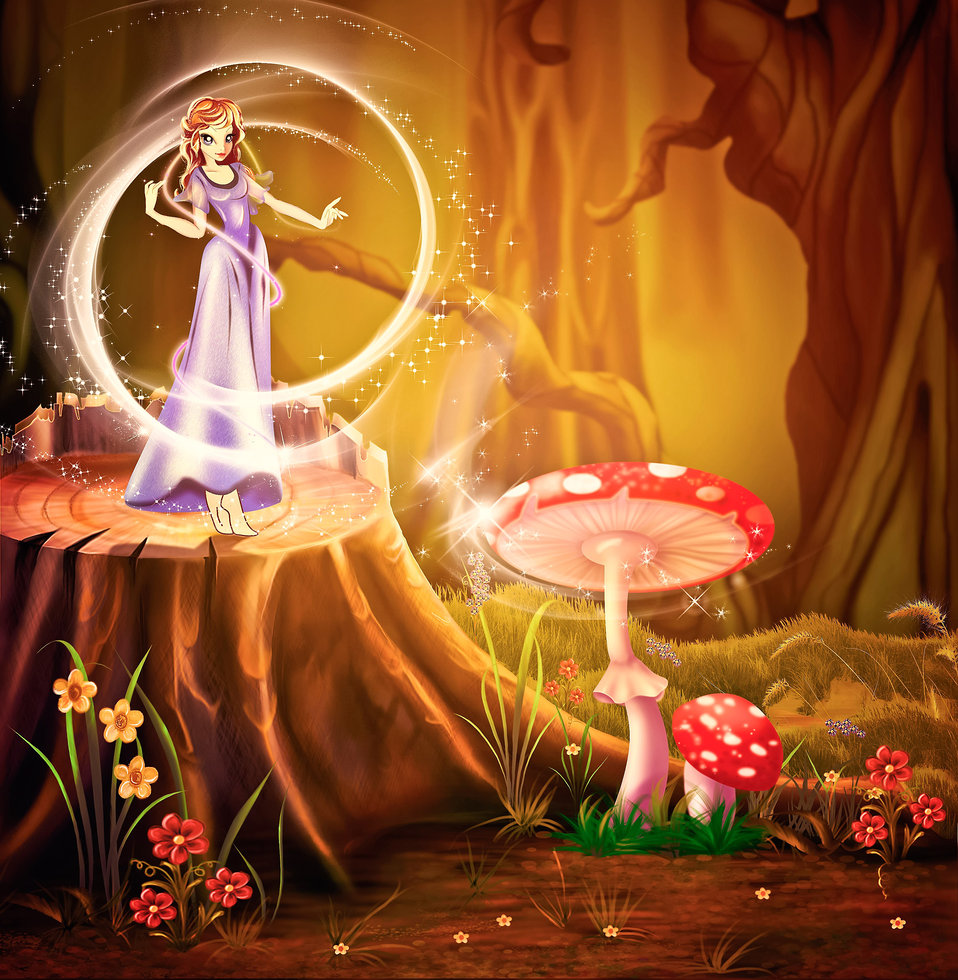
Fairy tale scene

Forest fairy conjures with mushrooms. enchanted forest. children's illustration..